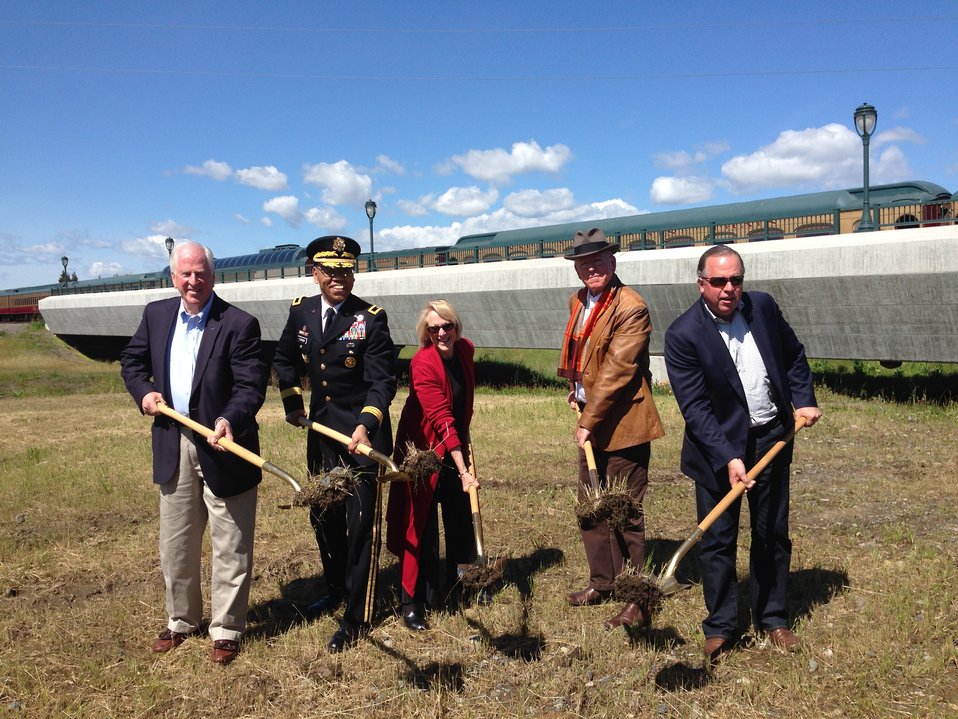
Corps joins Rep. Mike Thompson, Napa officials to break ground on new dry bypass

(From left) Representative Mike Thompson, South Pacific Division Commander Brig. Gen. David Turner, Napa Mayor Jill Techel, Friends of the Napa River president Bernhard Krevet and County Supervisor Bill Dodd raise their dirt-filled shovels during a ground breaking ceremony April 5, 2014, to officially begin construction on a new dry bypass in Napa, Calif. Critical infrastructure and railroad lines were relocated and elevated to prepare for the addition of the new dry bypass, which is scheduled to be complete in June 2015.